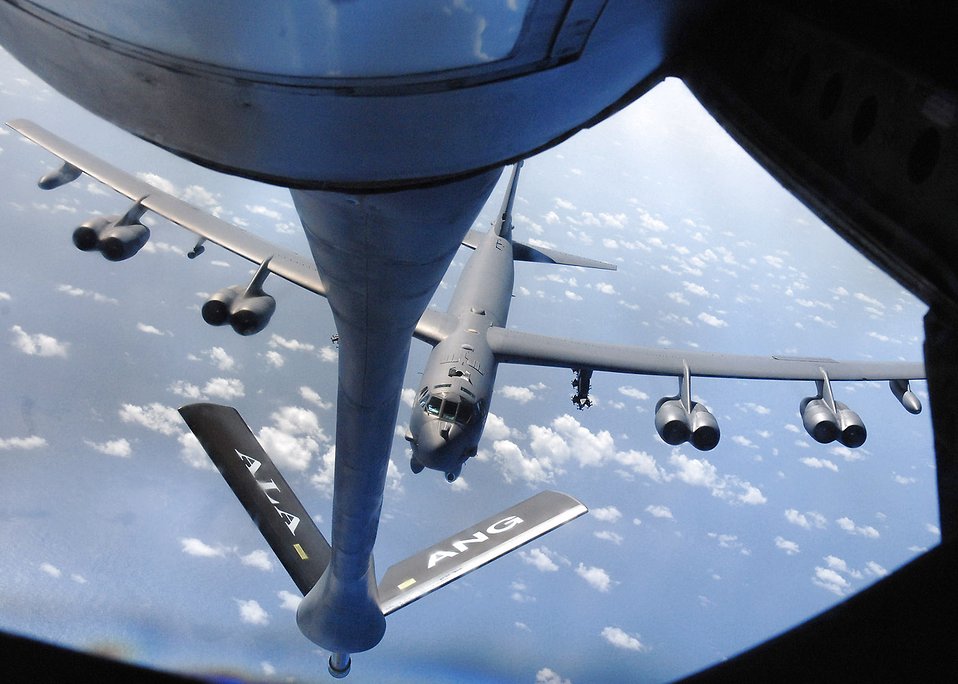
Women pilots: A weapon to be used

A B-52 Stratofortress prepares to receive fuel from a KC-135 Stratotanker during a practice aerial refueling mission March 19 near the Mariana Islands. The KC-135 is from the 106th Air Refueling Squadron of the Alabama Air National Guard and the B-52 is assigned to the 96th Expeditionary Bomb Squadron from Barksdale AFB, La.